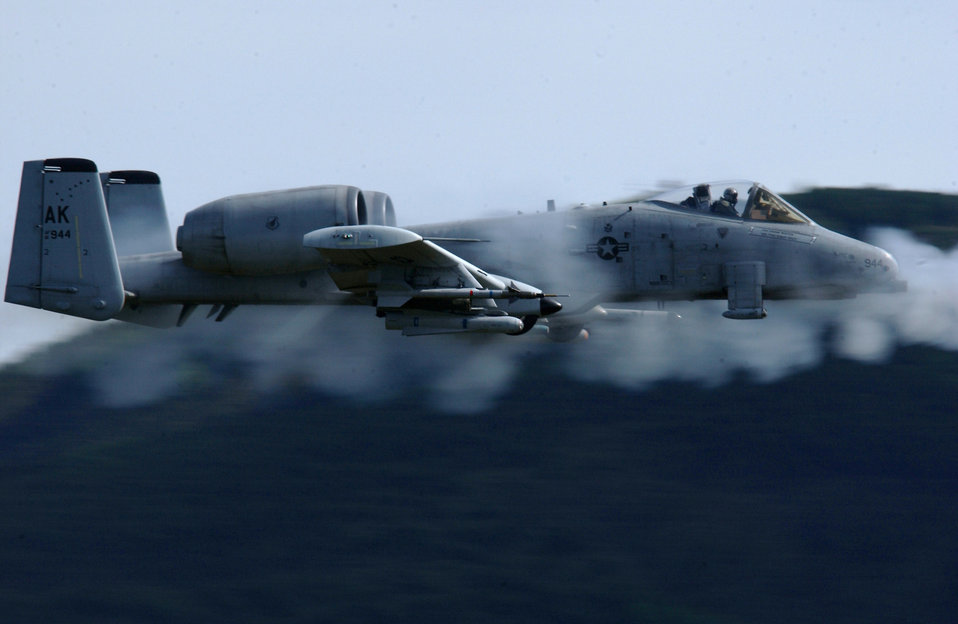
Thunder over Alaska

An A-10 Thunderbolt II pilot fires the aircraft's 30mm Gatling gun May 29 during an exercise over the Pacific Alaska Range Complex in Alaska. The seven-barrel weapon can fire 3,900 rounds a minute. The fighter is assigned to the 355th Fighter Squadron from Eielson Air Force Base, Alaska.